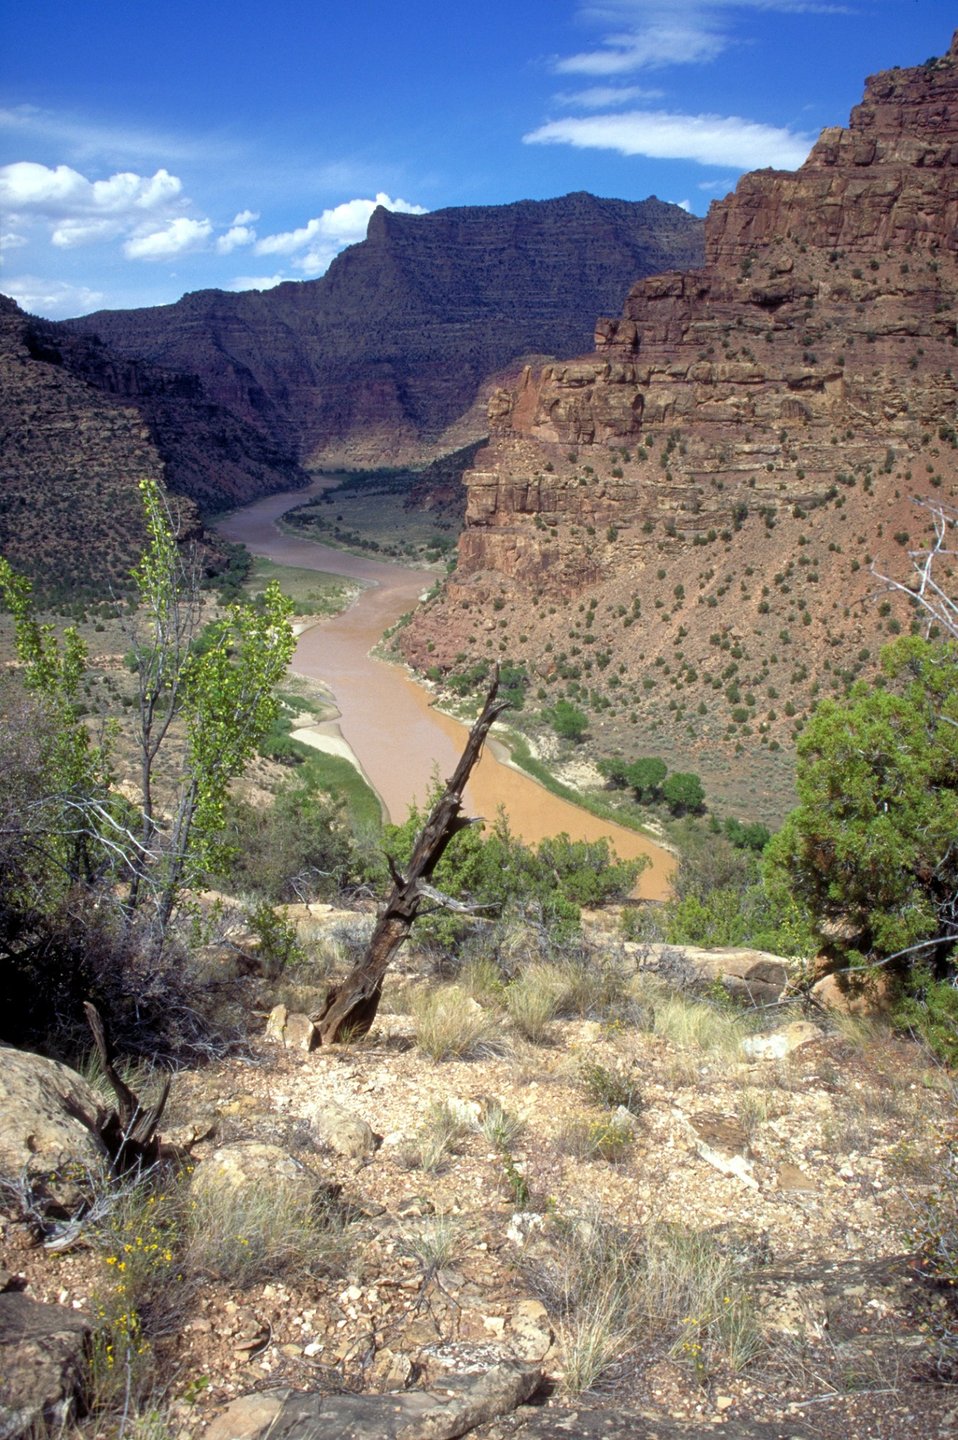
Desolation/Gray Canyons near Price, Utah.